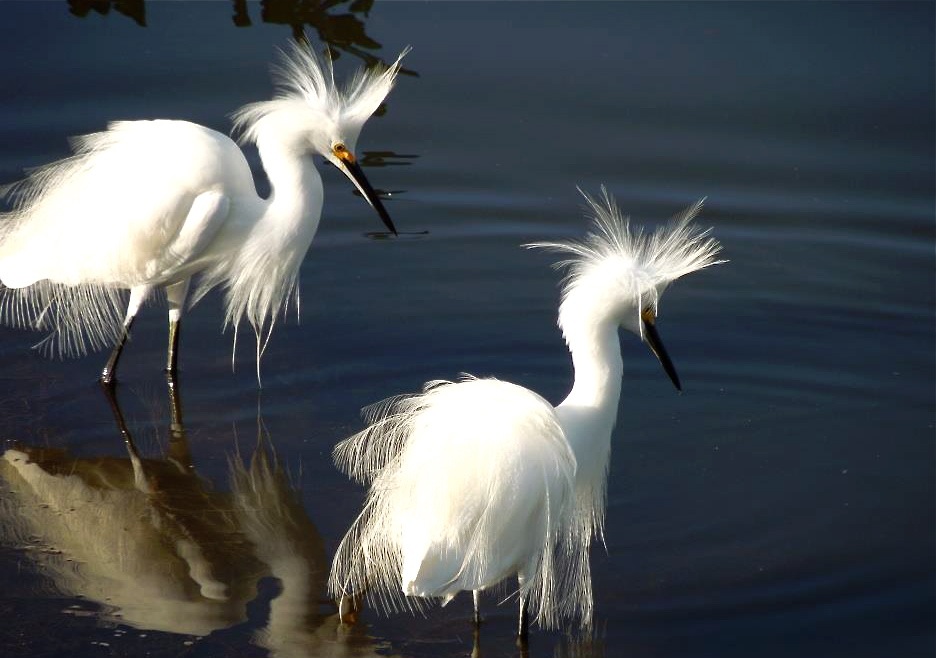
snowy egrets show off....

...their gorgeous breeding plumage as they feud over feeding territories - and perhaps over mates as well - in this photo taken at J.N. Ding Darling National Wildlife Refuge in FL and posted on March 1, 2012.